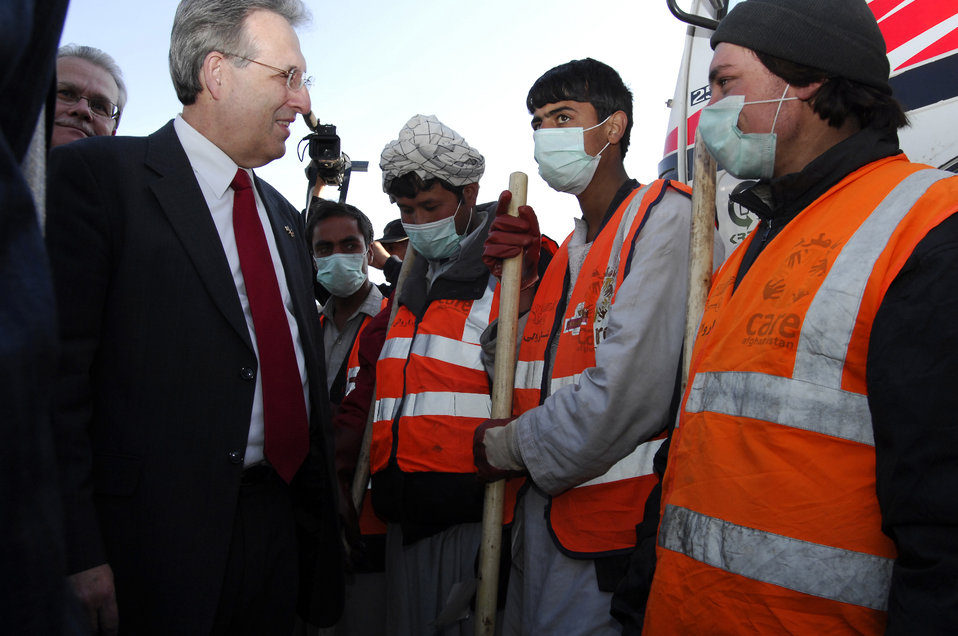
Care84